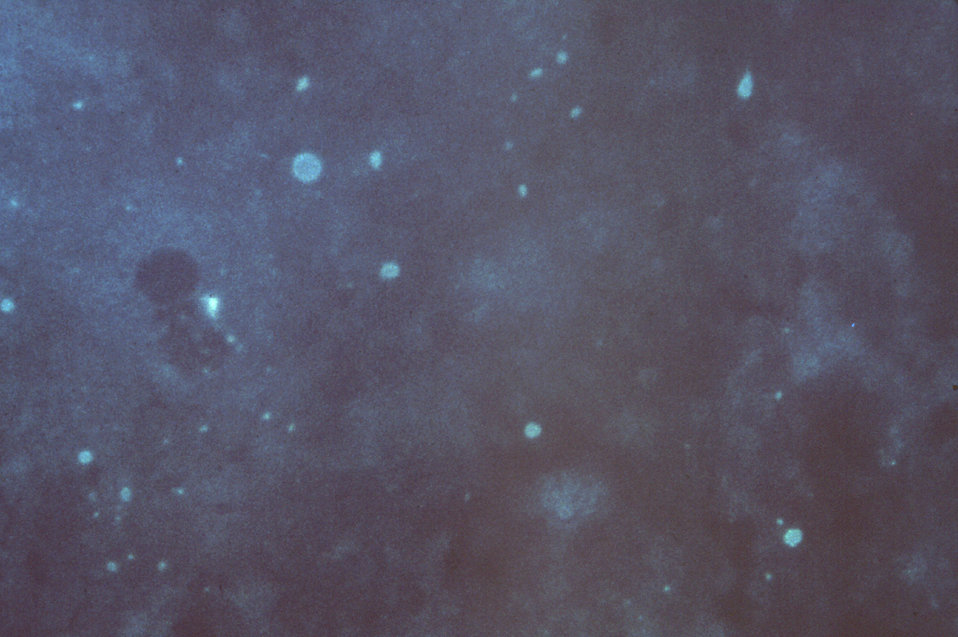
This fluorescent stained micrograph of fox brain tissue infected with street rabies virus shows Negri bodies and antigenic dust.